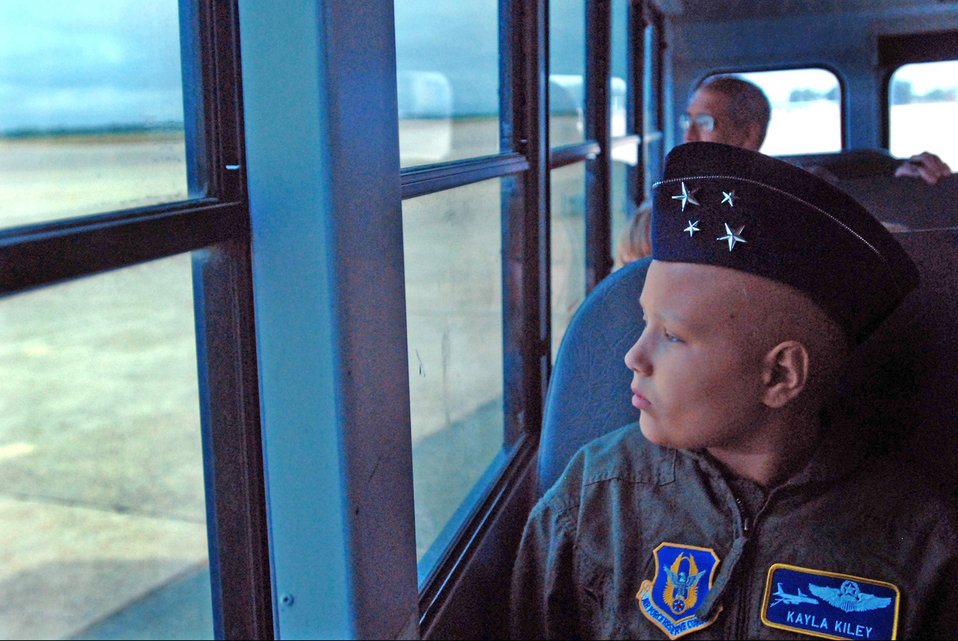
Pilot for a day leaves Andrews with memories for a lifetime

Kayla Kiley looks out at the flightline while riding in a bus to visit the 121st Fighter Squadron as part of the Pilot for a Day Program July 23 at Andrews Air Force Base, Md. Kayla is currently battling cancer.